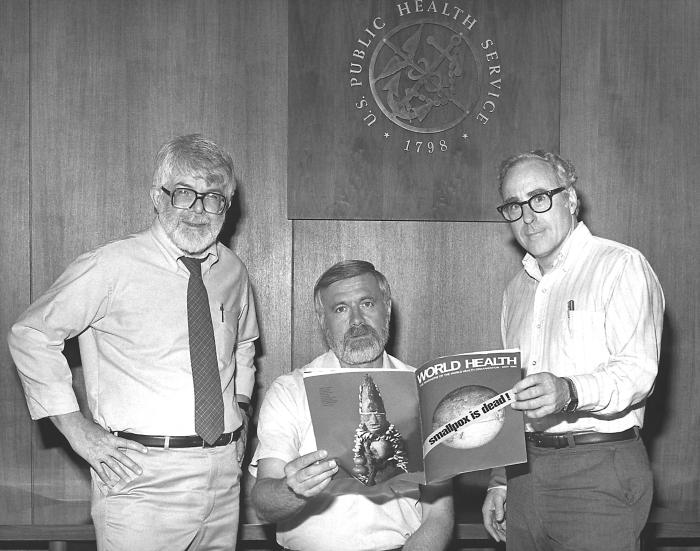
This 1980 photograph taken at the Centers for Disease Control, depicted three former directors of the Global Smallpox Eradication Program as they read the good news that smallpox had been eradicated on a global scale. From left to right, Dr. J. Donald Millar, who was Director from 1966 to 1970; Dr. William H. Foege, who was Director from 1970 to 1973, and Dr. J. Michael Lane, who was Director from 1973 to 1981.